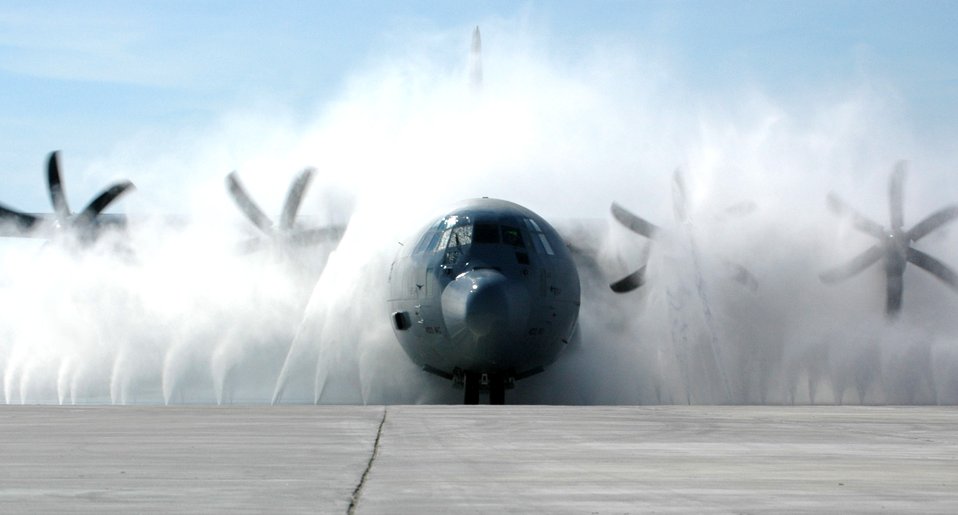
Bird Bath

A C-130J Hercules is cleaned up in the new wash system at Keesler Air Force Base, Miss. Aircraft from the Air Force Reserve Command's 403rd Wing fly many hours over the Gulf of Mexico. Salt and moisture could lead to corrosion if aircraft are not kept clean.